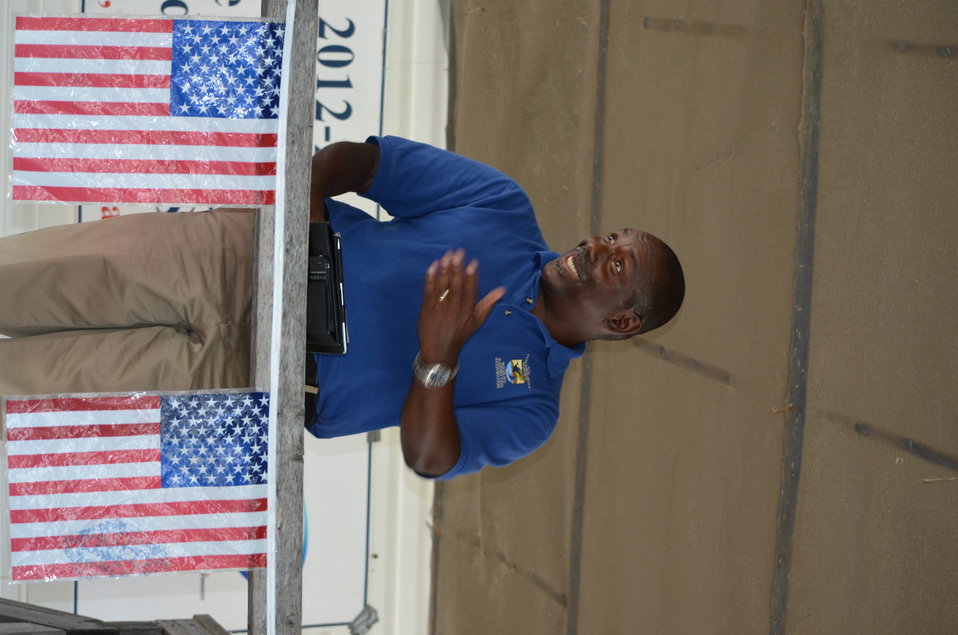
Assistant Director of Migratory Bird Program, Jerome Ford congratulates Joe Hautman on his achievements as wildlife artist and advocate for the Federal Duck Stamp at the South Saint Paul Rod and Gun Club.